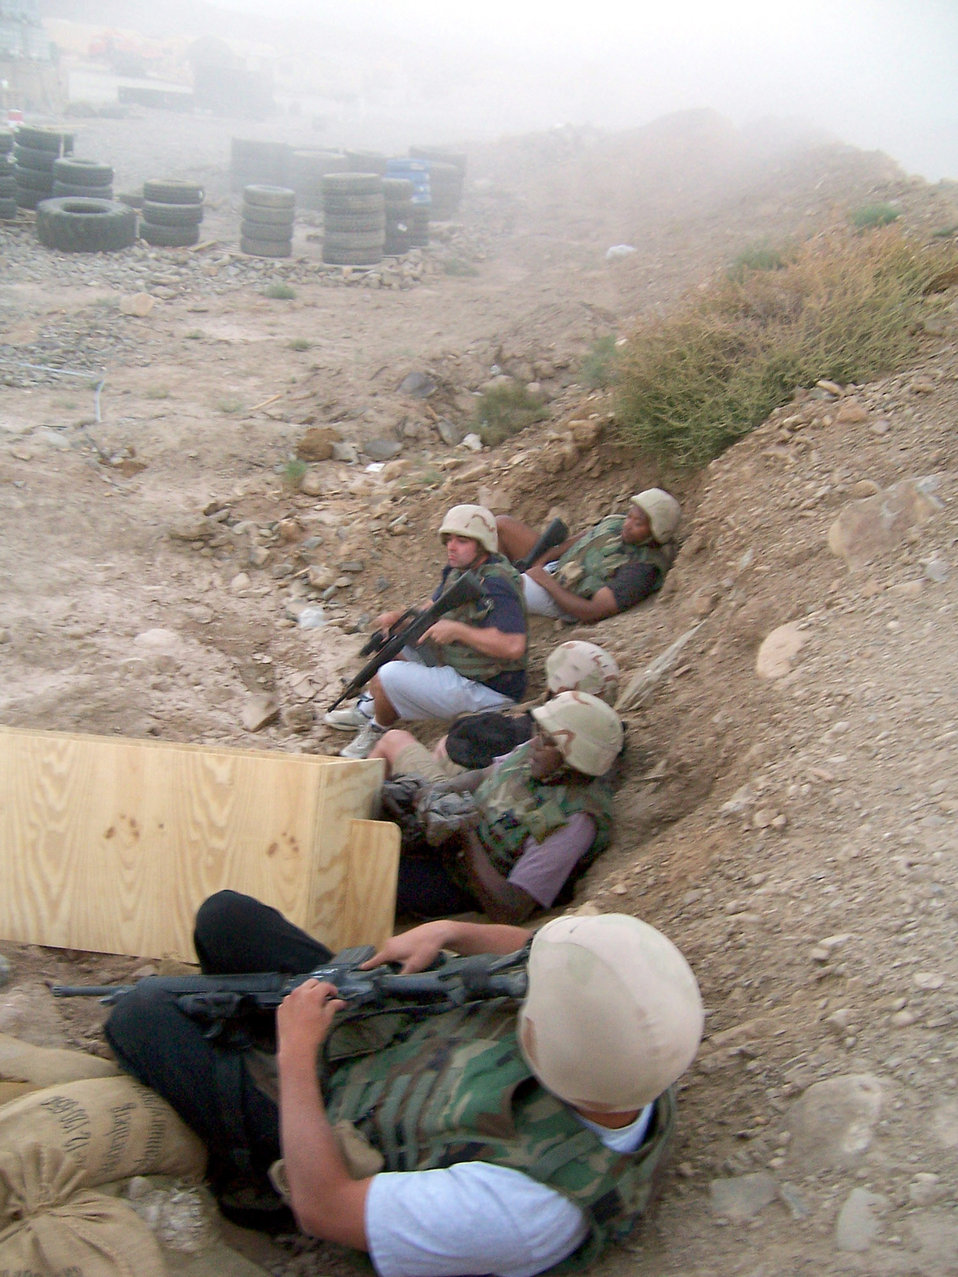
Rocket attack

CAMP CARLSON, Afghanistan (AFPN) -- Firefighters take cover during a 107mm rocket attack at this camp in eastern Afghanistan. Five rockets struck the camp during the dusk attack, but no one was seriously injured. The six-man rapid reaction fire rescue team is the only one of its kind in Afghanistan and deployed to provide airfield fire protection for the camp. Team members are from Ramstein Air Base, Germany, and Scott Air Force Base, Ill.